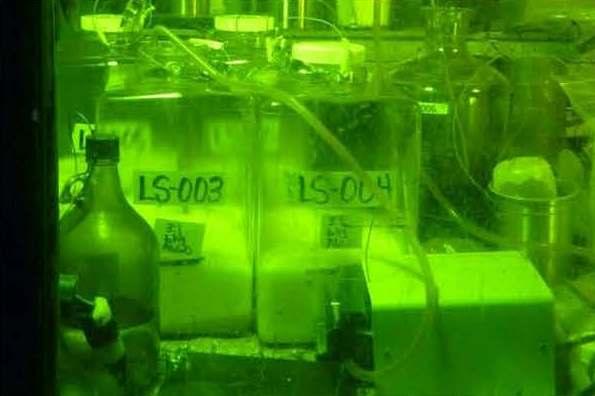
Recovery Act Helps Office of Science Laboratory Achieve Significant Milestone

With the support of the Recovery Act, the DOE Office of Science’s Argonne National Laboratory (ANL) has reached a significant milestone in reducing its nuclear footprint now that it has reclassified a key building based on the amount of radiological material it holds.